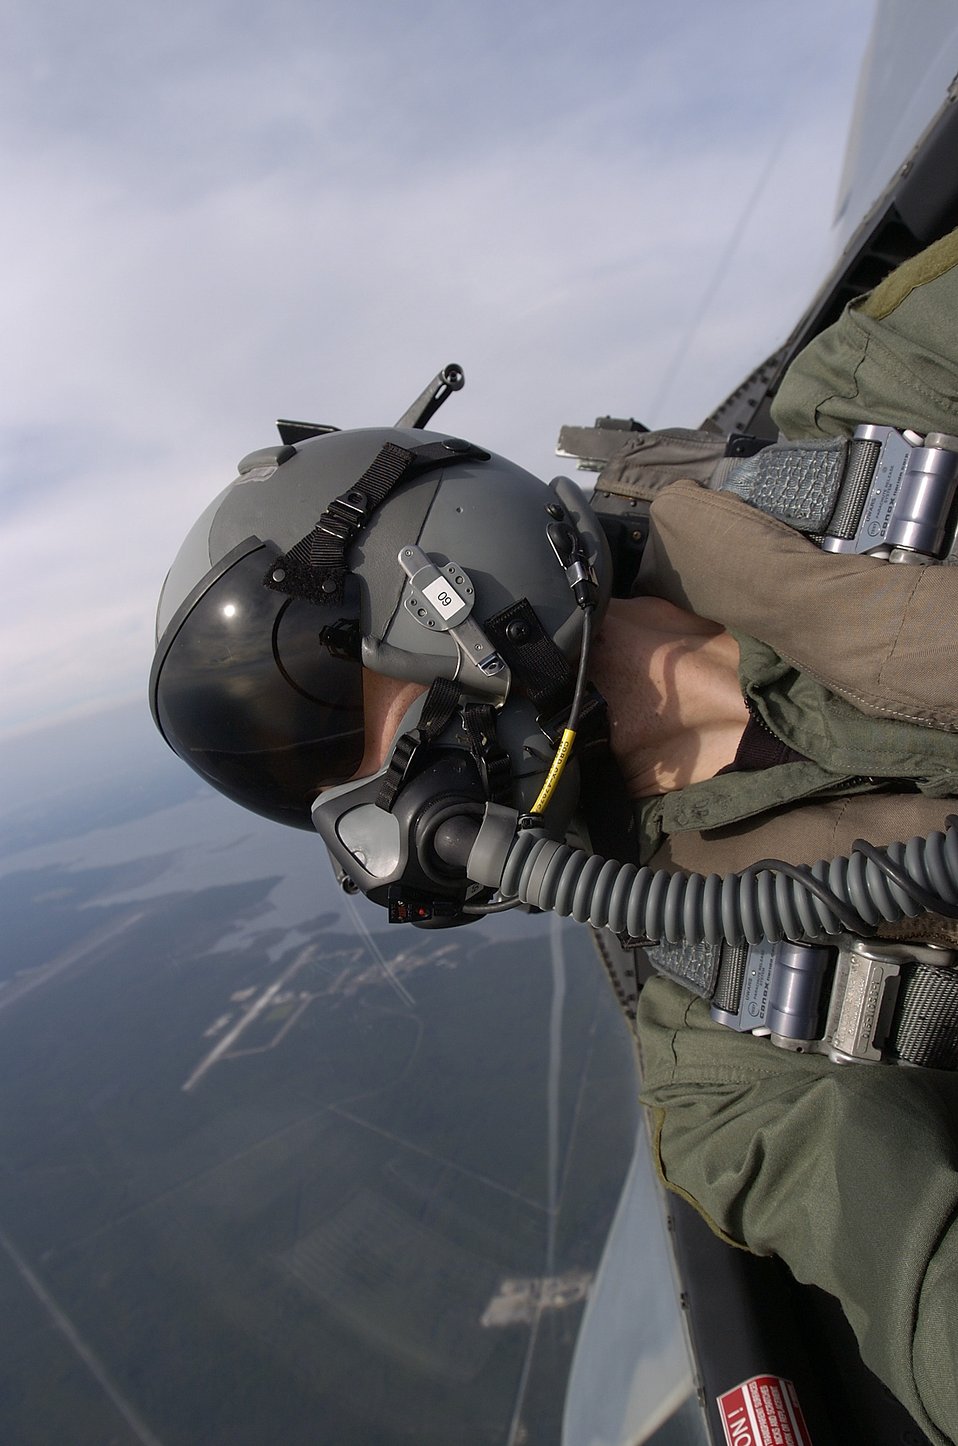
Going to fire

OVER FLORIDA -- An aircrew member flying an F-15 Eagle pulls away from Tyndall Air Force Base, Fla., en-route to a live weapons-fire exercise during William Tell 2004 here Nov. 10. Aircrews are judged on their ability to launch missiles at a sub-scale drone. This is the 50th anniversary of the William Tell competition, which tests an aircrew's ability to perform under combat conditions. Two weeks of competition will challenge pilots, weapons loaders and maintainers from five F-15 fighter wings.